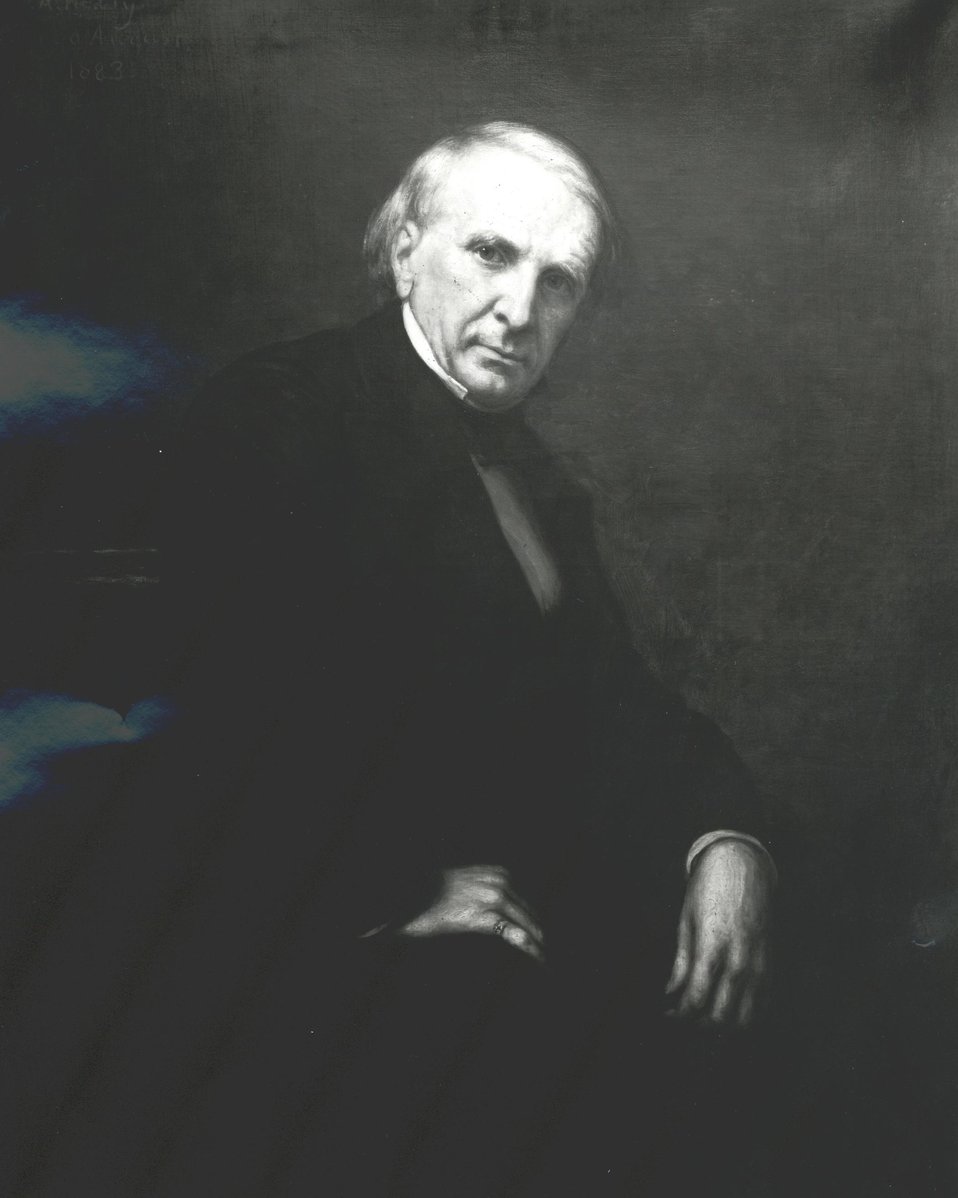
Elihu B. Washburn, U.S. Secretary of State, March 5, 1869 to March 16, 1869